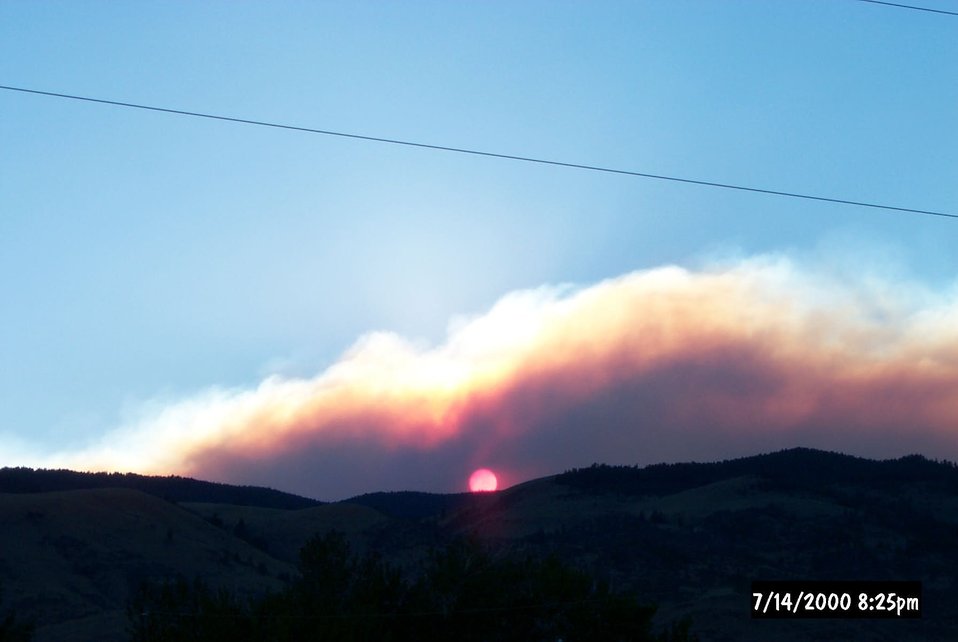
Smoke Fire Fenster Fire Salmon Field Office USRD Upper Snake River District